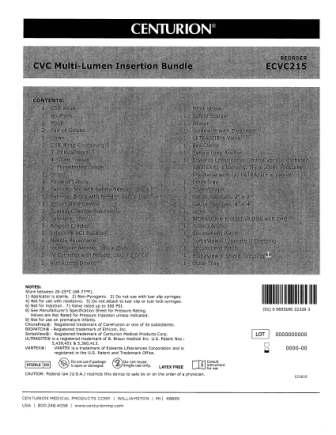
RECALLED - Convenience kits which contain bacteriostatic sodium chloride solution by American Regent

April 1, 2011 - Product Recall - Centurion Medical Products Initiates Voluntary Recall of Customized Convenience Kits (including select Central Venous Catheter, PICC Insertion, and VAD Trays) that contain American Regent’s Bacteriostatic Sodium Chloride Injection, USP, 0.9% 30 mL Multiple Dose Vials.